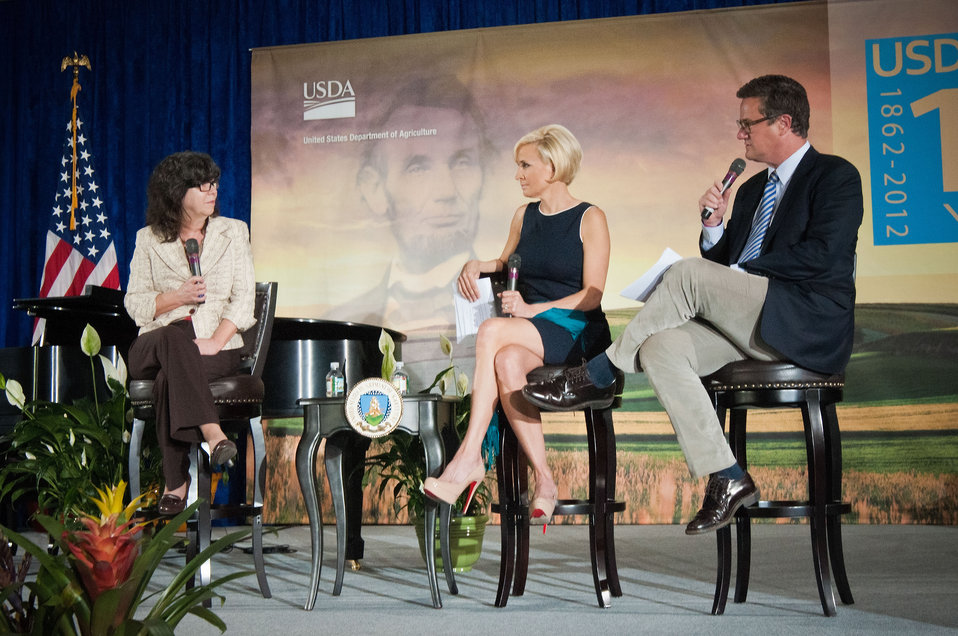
From left: Jessica Shahin, Associate Administrator, Supplemental Nutrition Assistance Program (SNAP), Mika Brzezinski and Former Congressman Joe Scarborough (R-Fla.) hosts of MSNBC’s “Morning Joe and Masters of Ceremony listen to Shahin explain the emergency food assistance provided to survivors of Hurricane Katrina at the United States Department of Agriculture's 150th Anniversary celebration in Washington, D.C., on Tuesday, May 15, 2012.